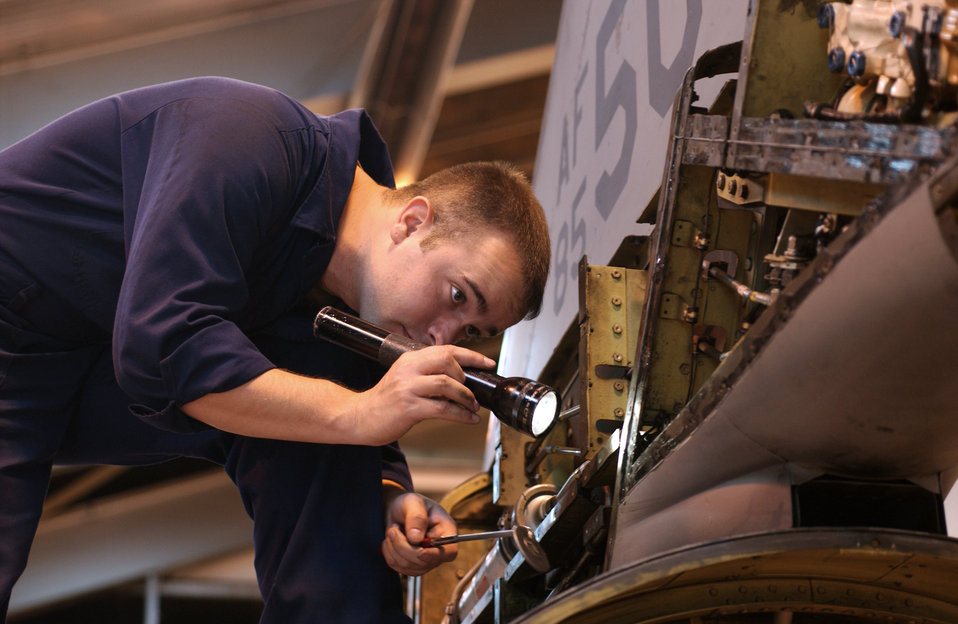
Getting ready for QA

LUKE AIR FORCE BASE, Ariz. -- Airman 1st Class Joel Thill checks for foreign objects, debris, and any missing items before a quality assurance inspection here recently. Airman Thill is an F-16 crew chief assigned to the 56th Equipment Maintenance Squadron.